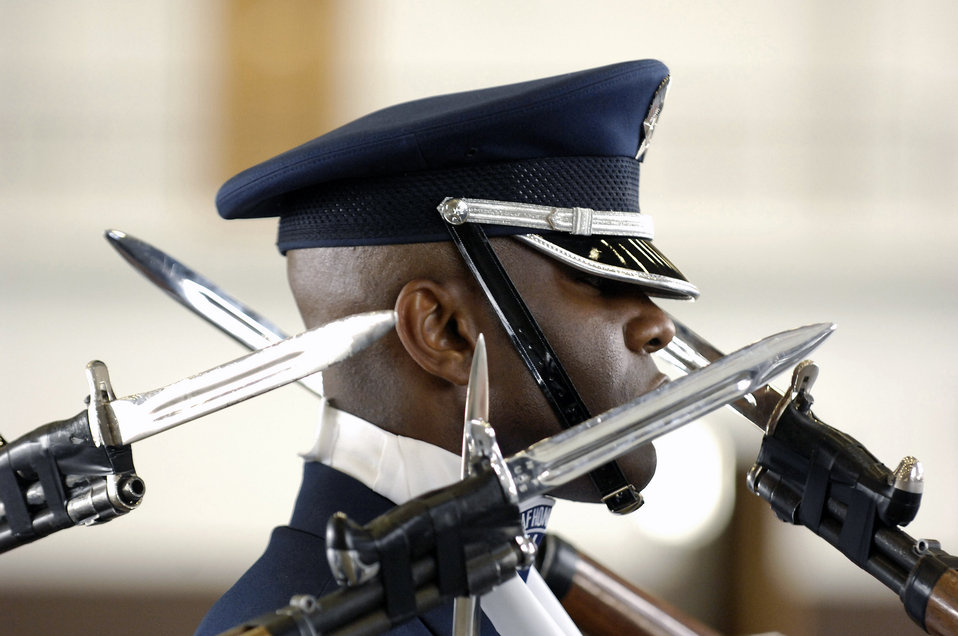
Drill team provides northern exposure for Air Force

Master Sgt. Steven West remains poised as Air Force Honor Guard Drill Team weapons fly by during a performance May 13 at Ellsworth Air Force Base, S.D. The team is the traveling component of the Air Force Honor Guard and tours world-wide representing all Airmen and showcasing Air Force precision to recruit, retain and inspire for the Air Force mission. Sergeant West is the drill team superintendent.